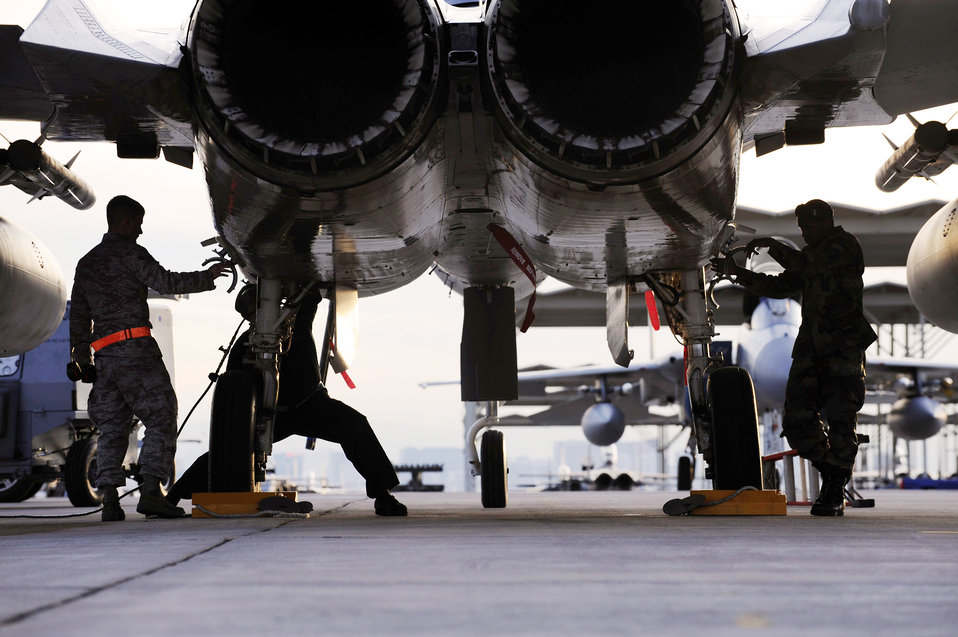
Working in sync

Crew chiefs perform maintenance on an F-15 Eagle Feb. 2, 2010, during Red Flag at Nellis Air Force Base, Nev. They are assigned to the 18th Aircraft Maintenance Squadron from Kadena Air Base, Japan. Red Flag is a realistic combat training exercise.